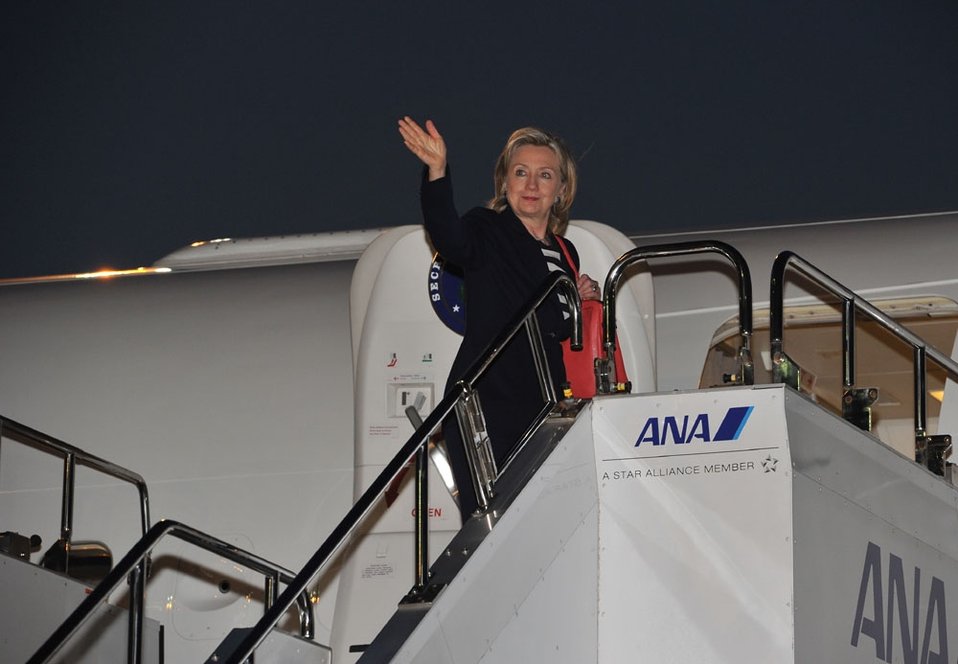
Secretary Clinton Departs Tokyo

U.S. Secretary of State Hillary Rodham Clinton departs from Tokyo's Haneda Airport after a quick three-hour visit to Japan, May 21, 2010.